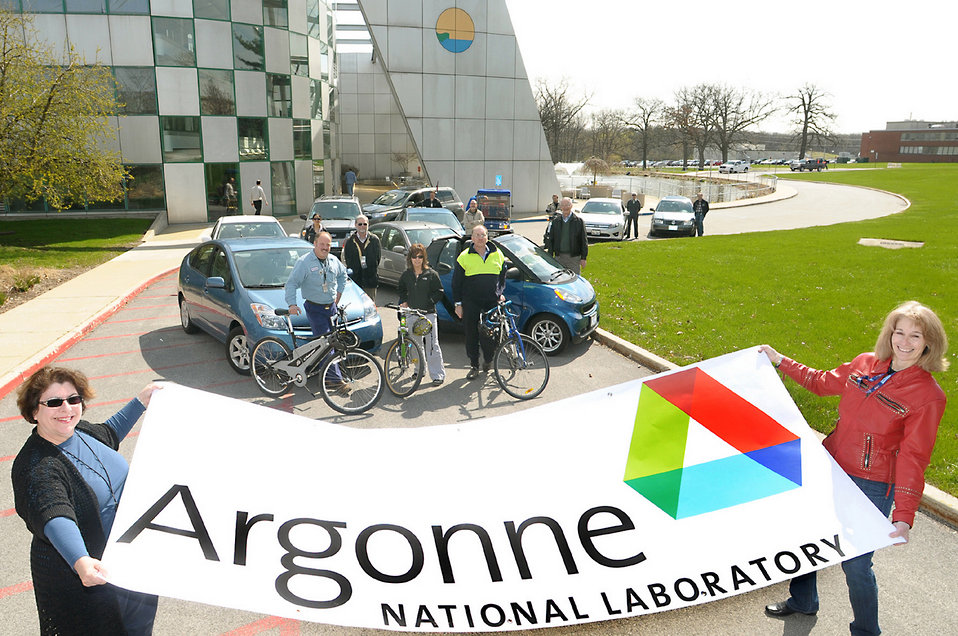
Argonne National Laboratory employees display their green vehicles from electric bicycles to hybrid gas-electric to plug-in electrics to all-electric vehicles.